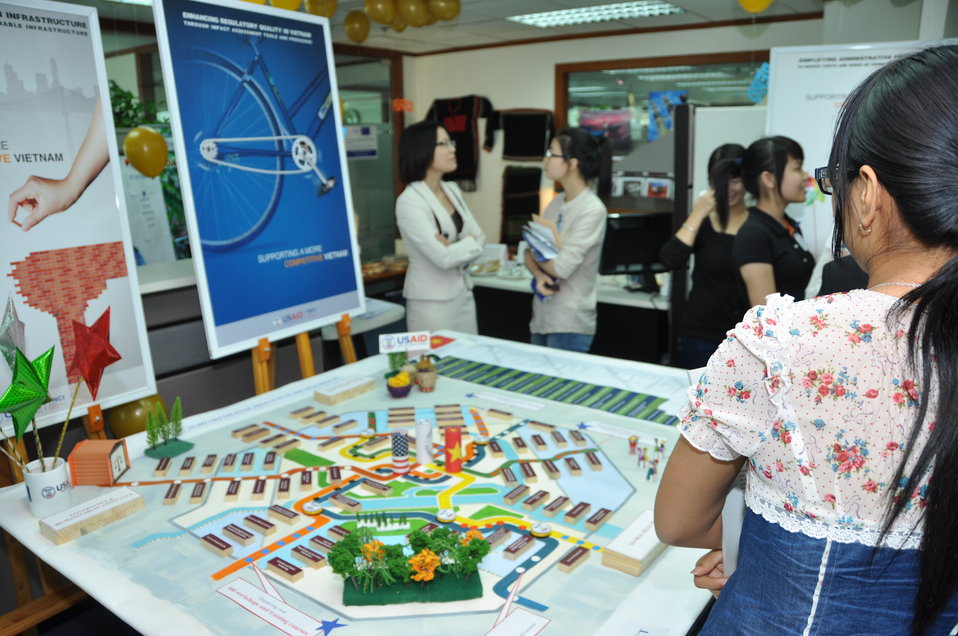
USAID Vietnam Open House, November 3, 2011